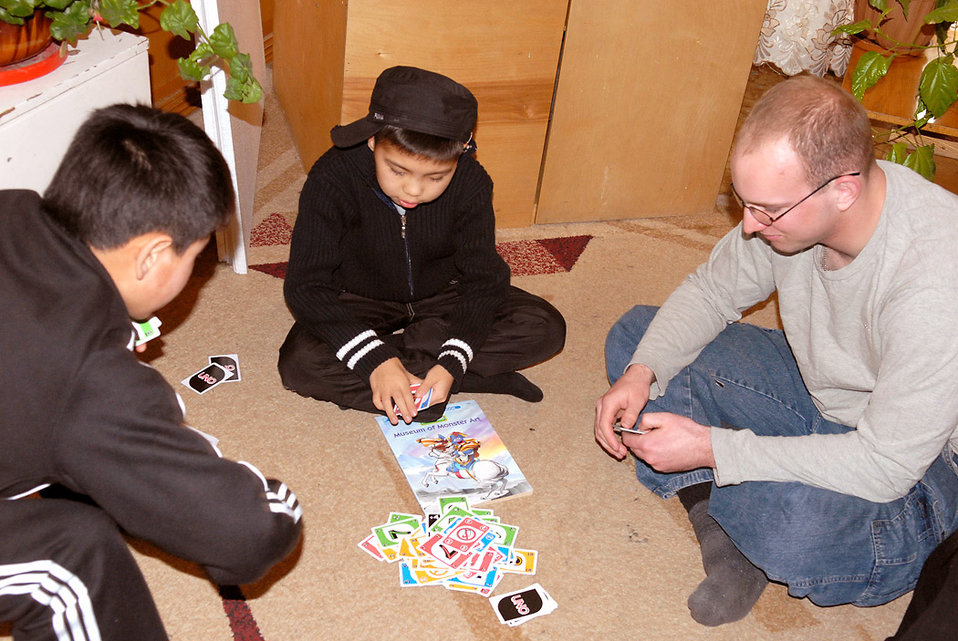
The heart of giving

Airman 1st Class Nick Gray-Bakker plays UNO with children who are awaiting heart surgery Dec. 3 in Bishkek, Kyrgyzstan. Over the past five years, $71,680 of contributions from Manas Air Base, Kyrgyzstan, Airmen have funded heart operations on 128 children. Airman Gray-Bakker is assigned to the 376th Expeditionary Logistics Readiness Squadron.